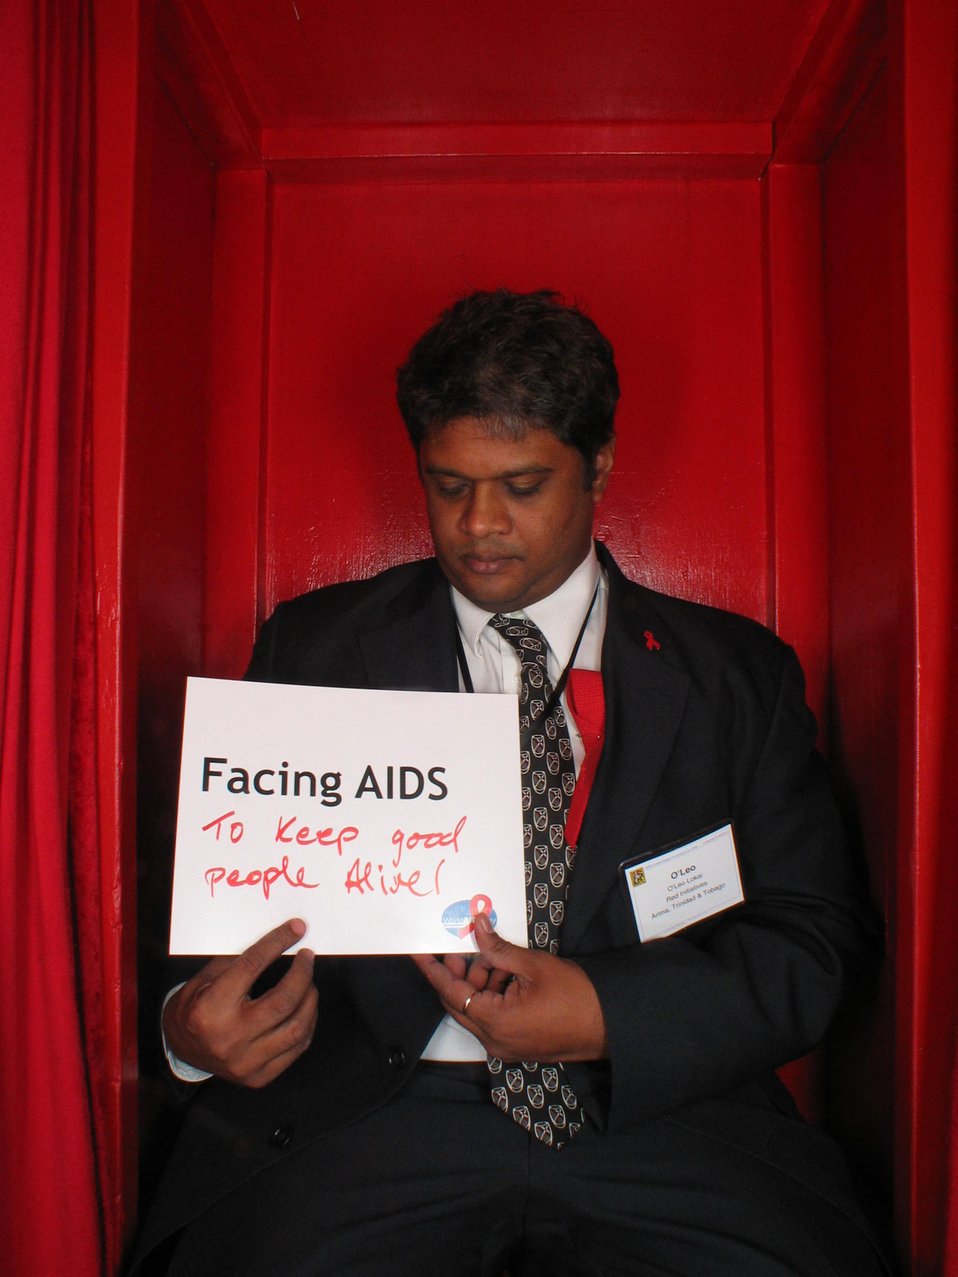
Facing AIDS to keep good people alive.